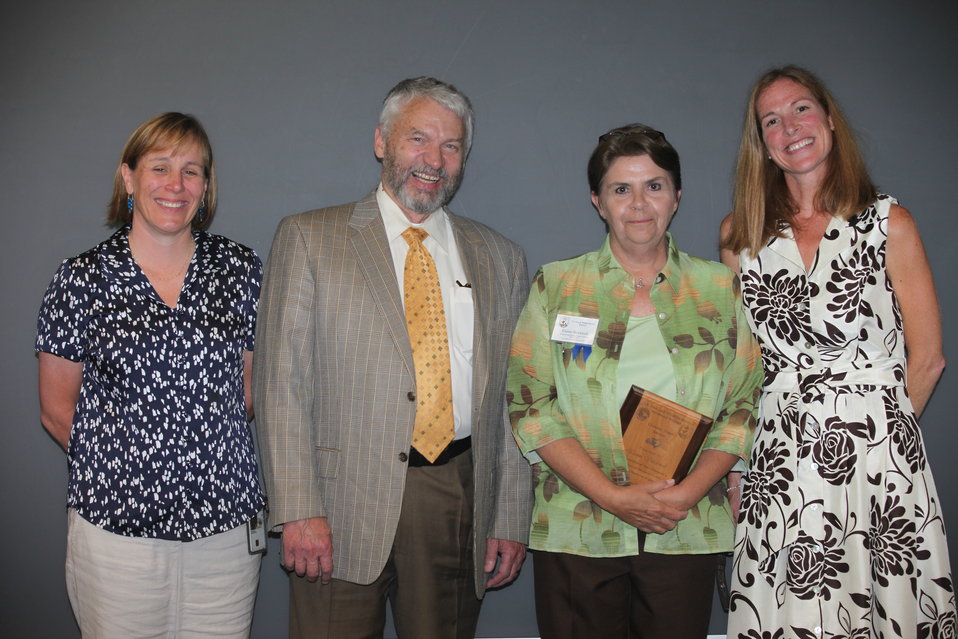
Elaine Stockwell, Fisheries, recieved the Region 5 Unsung Hero Award.
From left to right: Deputy Regional Director Deb Rocque, Deputy Director Rowan Gould, Elaine Stockwell, and Regional Director Wendi Weber